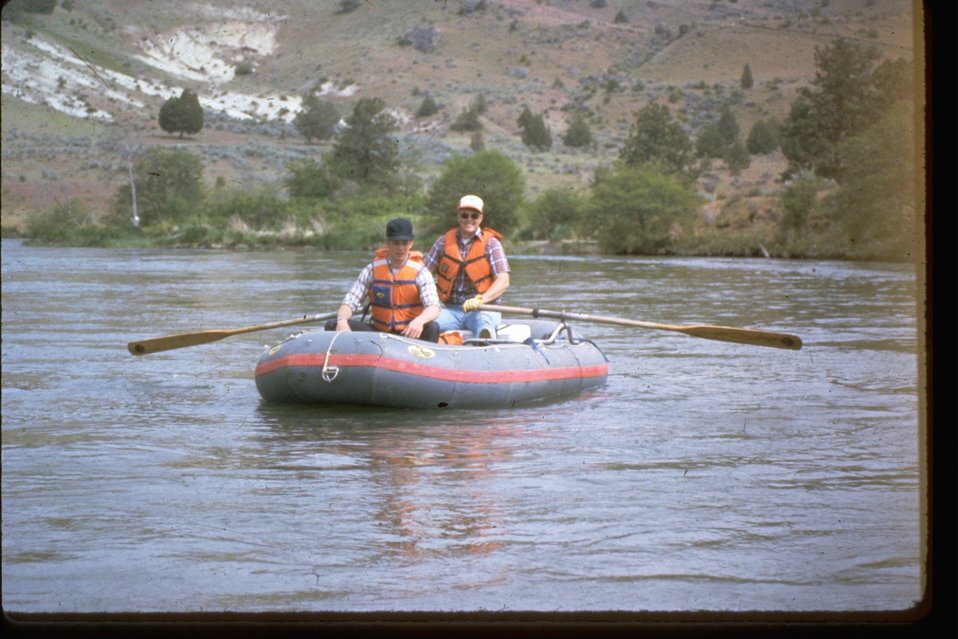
Rafting on the Lower Deschutes River.